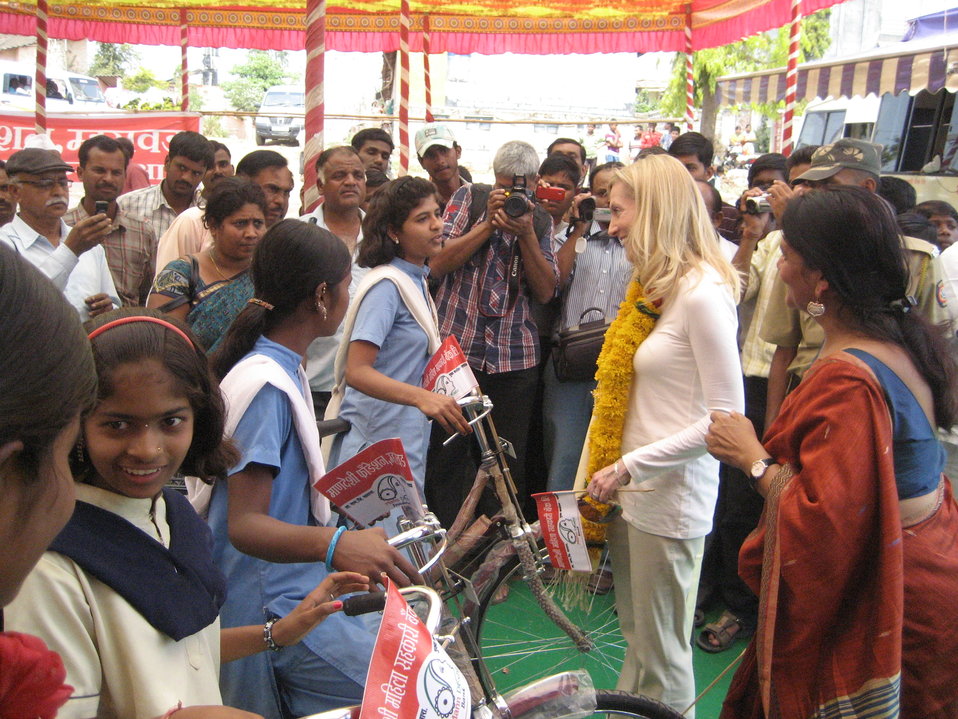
Lael Brainard's Visit to India

On Wednesday, March 2, Under Secretary Brainard saw the bank’s Freedom Ride Program, which provides bicycles to young girls to enable them to travel to school and continue their education.